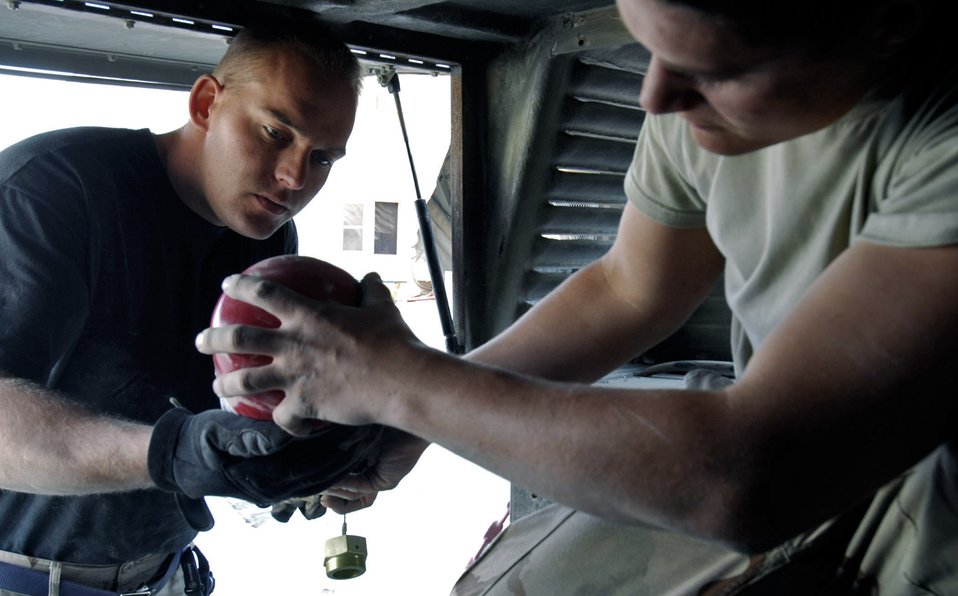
Frag Team Five

Staff Sgt. Benjamin Johnson hands Senior Airman Josh Theunissen a component of a fire suppression system to install into a Humvee Nov. 27. Both are members of Frag Team 5, which is responsible for installing up-armor kits, fire suppression systems, improved seat belts and gunner restraints in Air Force combat vehicles.